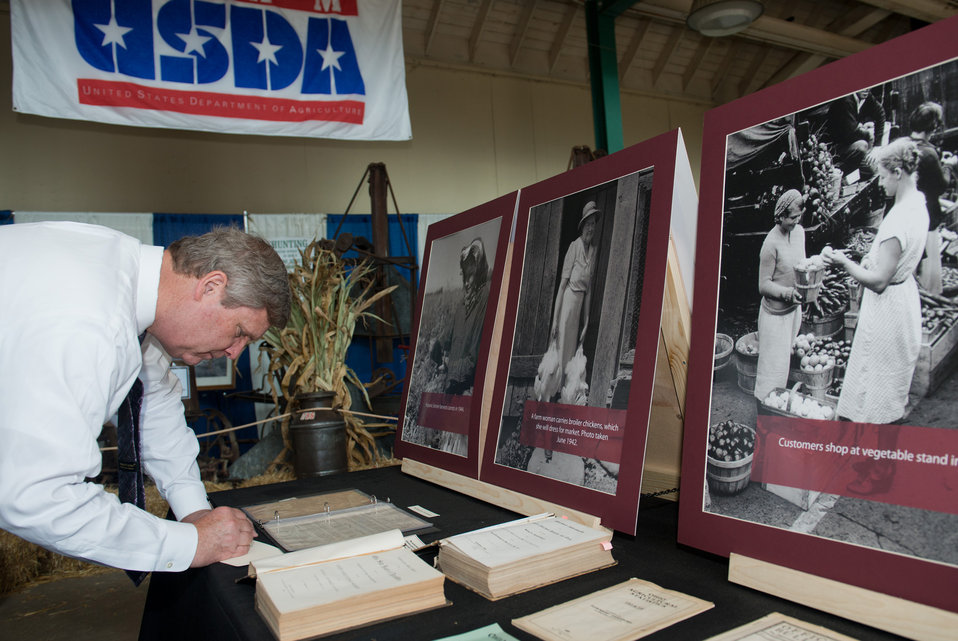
Agriculture Secretary Tom Vilsack writes down old statistics of corn and soybean production from the 1940's Ohio Agricultural Statistics data at the Team U.S. Department of Agriculture (USDA) Booth at the Ohio State Fair in Columbus, OH on Friday, August 3, 2012. The Team USDA Booth’s focus was on the 150th Anniversary of USDA.